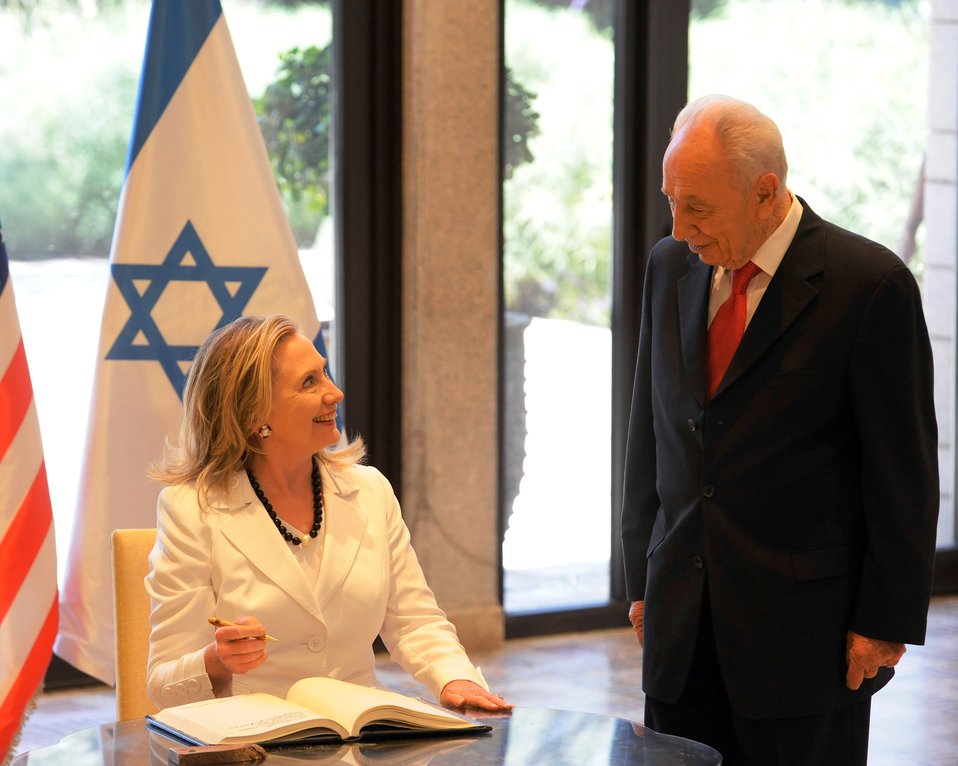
Secretary Clinton With Israeli President Peres

U.S. Secretary of State Hillary Rodham Clinton meets with Israeli President Shimon Peres in Israel, on July 16, 2012.